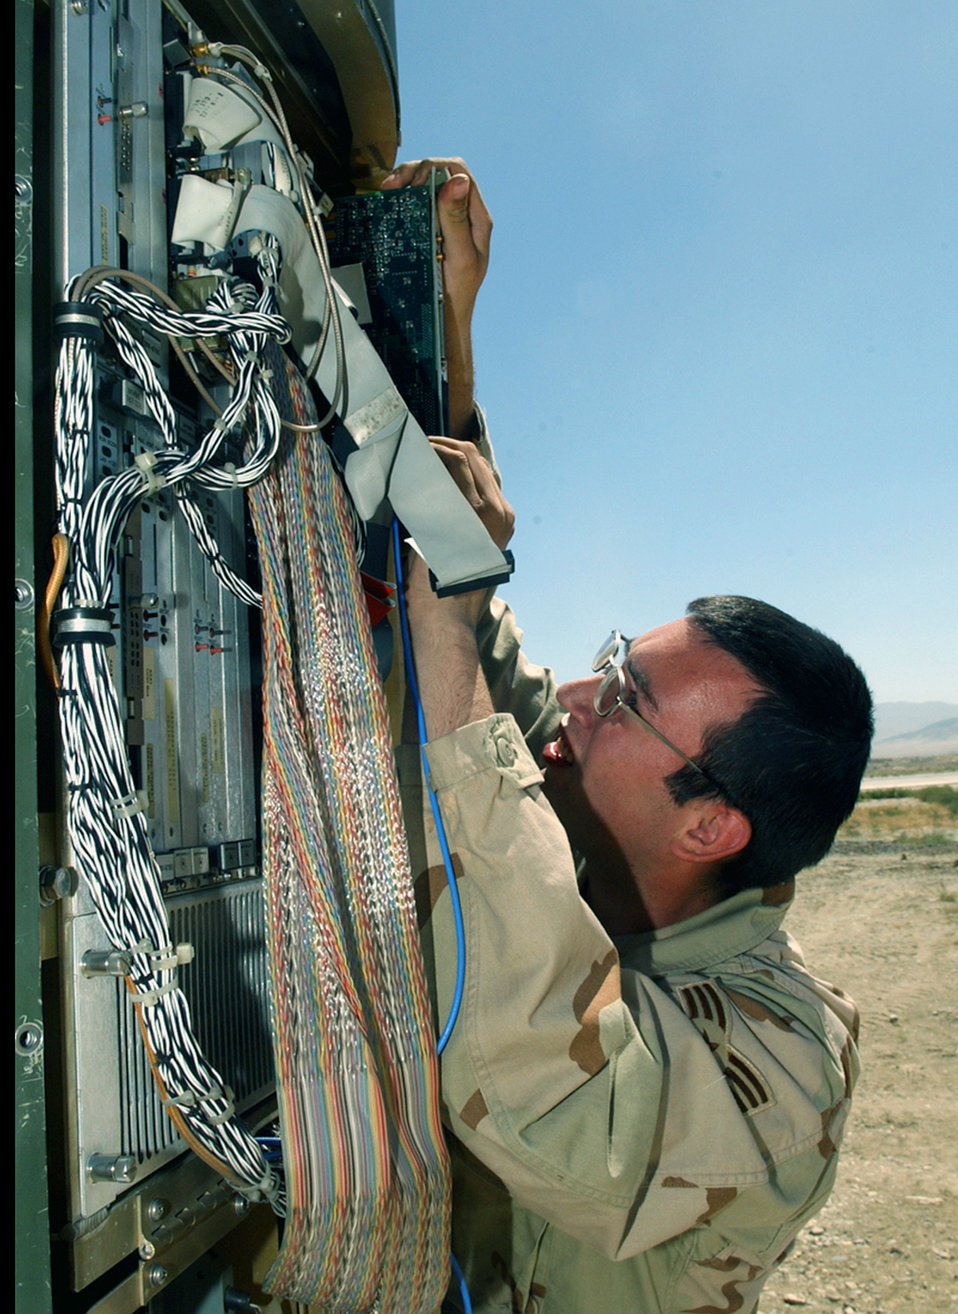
Radar techs keep skies safe

BAGRAM AIR BASE, Afghanistan -- Senior Airman Wade Evans replaces a circuit card in the Mobile Radar Navigation-25 tactical radar system. The system, built in 1998, is one of three in the world.